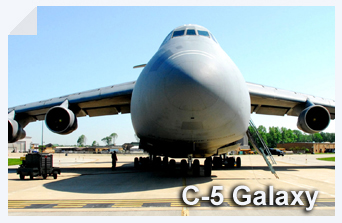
C-5 Galaxy

The C-5 Galaxy is one of the largest aircraft in the world. This workhorse is part of a modernization program to extend the life of the aircraft into the 21st century.